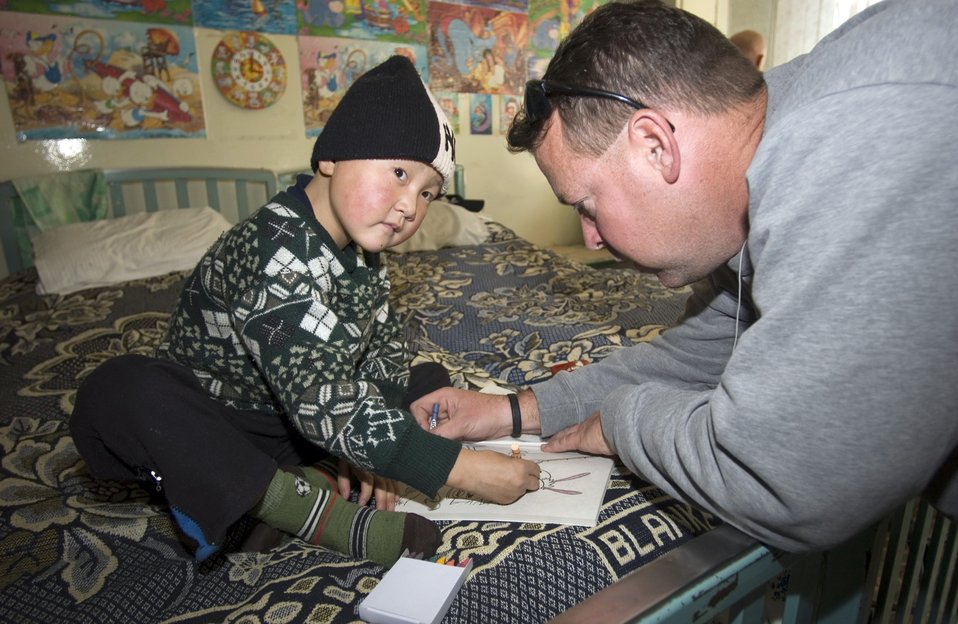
Cancer kids

BISHKEK, Kyrgyzstan (AFPN) -- Master Sgt. Michael McKeithan colors with a young patient at the cancer center. As a member of the Manas Air Base Outreach Society the sergeant donates time and money to help improve the lives of needy Kyrgyz people. The sergeant is a member of the 376th Expeditionary Logistics Readiness Squadron.